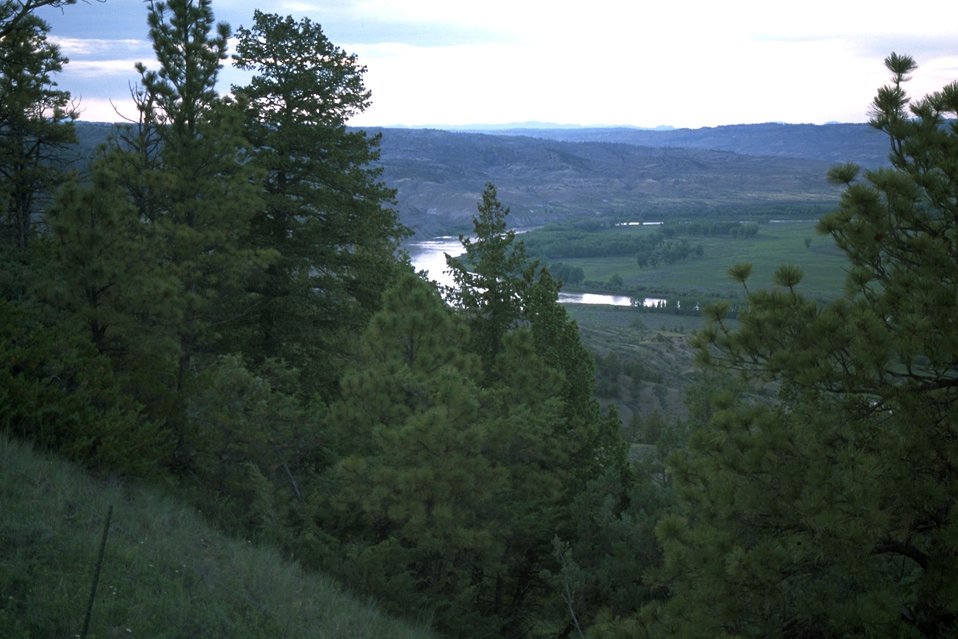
The Missouri River peeking through the fir trees in the Missouri Breaks area